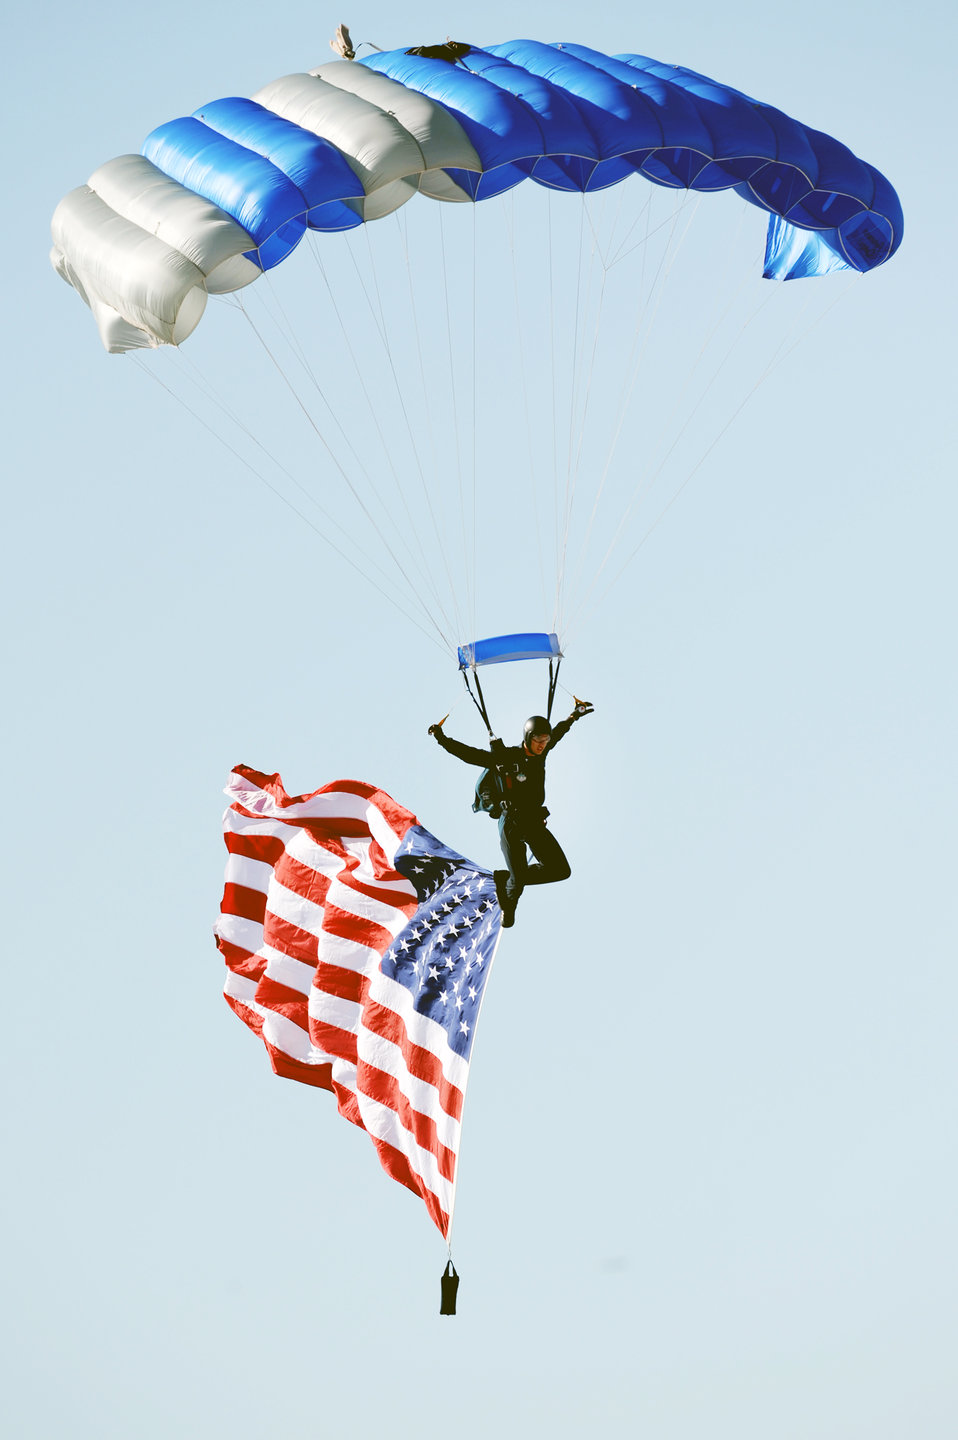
Thunderbirds close air show season

Cadet 1st Class Joseph Valdez, a U.S. Air Force Academy senior, parachutes with the American flag during the National Anthem Nov. 14, 2009, during the air show opening ceremony at Nellis Air Force Base, Nev. The open house is an opportunity for the Las Vegas community to view aerial demonstrations and static displays of various aircraft from the military.